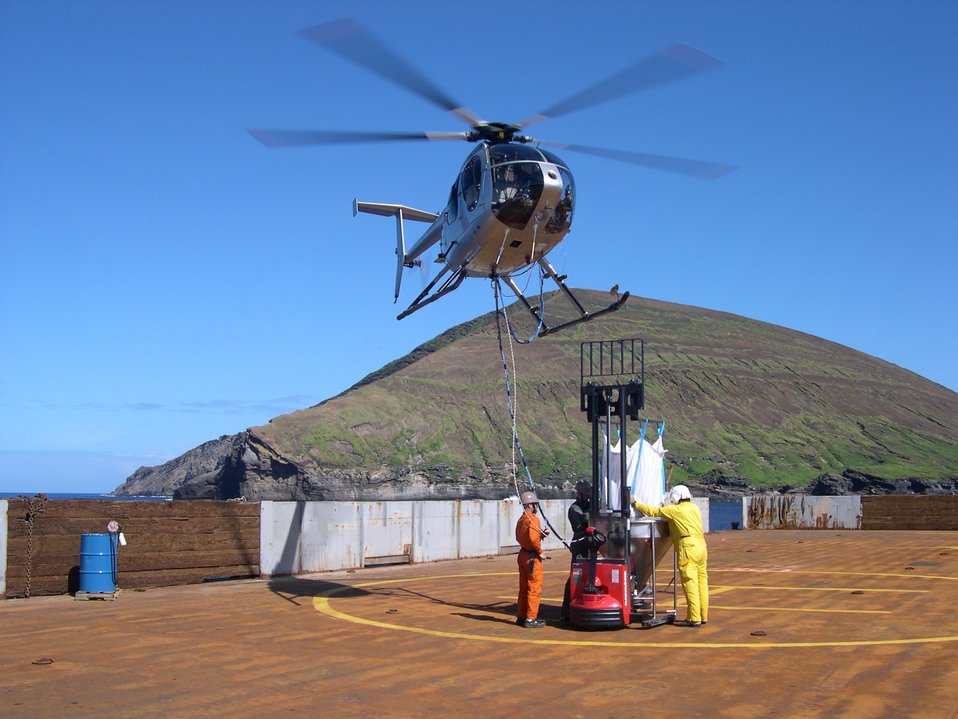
The U.S. Department of Agriculture's (USDA) Animal Plant Health and Inspection Service (APHIS) Wildlife Services (WS) experts assist State and non-governmental organizations with invasive rodent eradication efforts on the Aleutian, Hawaiian, Caribbean and other islands. These efforts have greatly improved the abundance and diversity of native plants and animals on the treated islands.